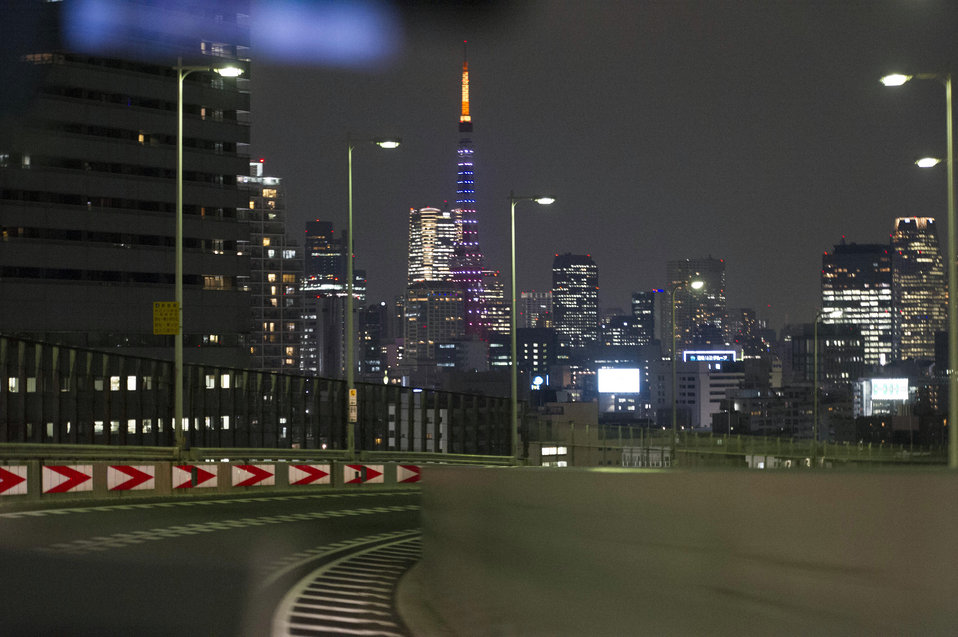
Tokyo Tower Lit Up in Red, White, and Blue in Honor of President Obama's Visit

The Tokyo Tower is lit up in red, white and blue to welcome U.S. President Barack Obama to the city on April 23, 2014.